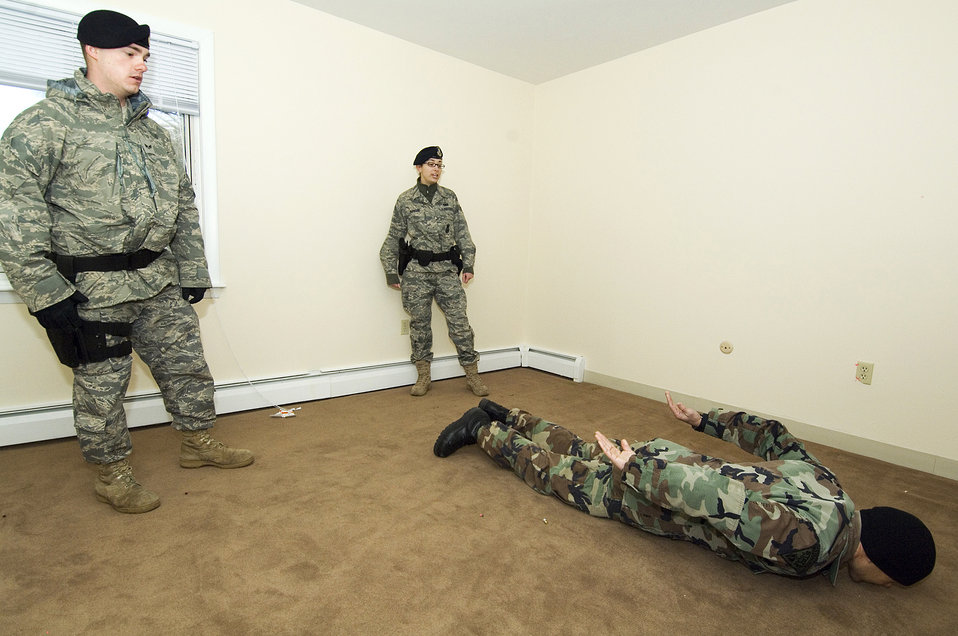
Joint training exercise strengthens AF, civilian partnerships

Senior Airman Nicholas Haines (left) and Airman 1st Class Christine Burnard give orders to a suspect played by a member of the Massachusetts State Police Special Tactical Operations team during a joint police training exercise March 16 at Hanscom Air Force Base, Mass.